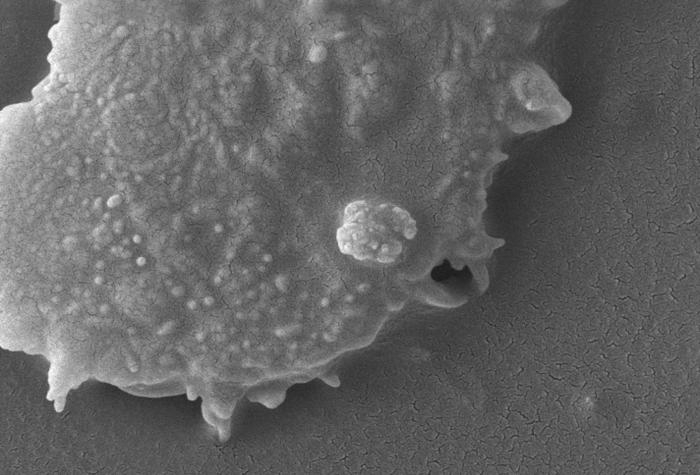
This scanning electron micrograph (SEM) revealed some of the ultrastructural features seen on the surface of an Acanthamoeba polyphaga protozoan. Note the amorphous nature of the organism's exterior from which pseudopodia, from the Latin pseudo = false, and podia = feet, can extend. These pseudopodia enable the amoeba to move about, and grasp objects in its environment.